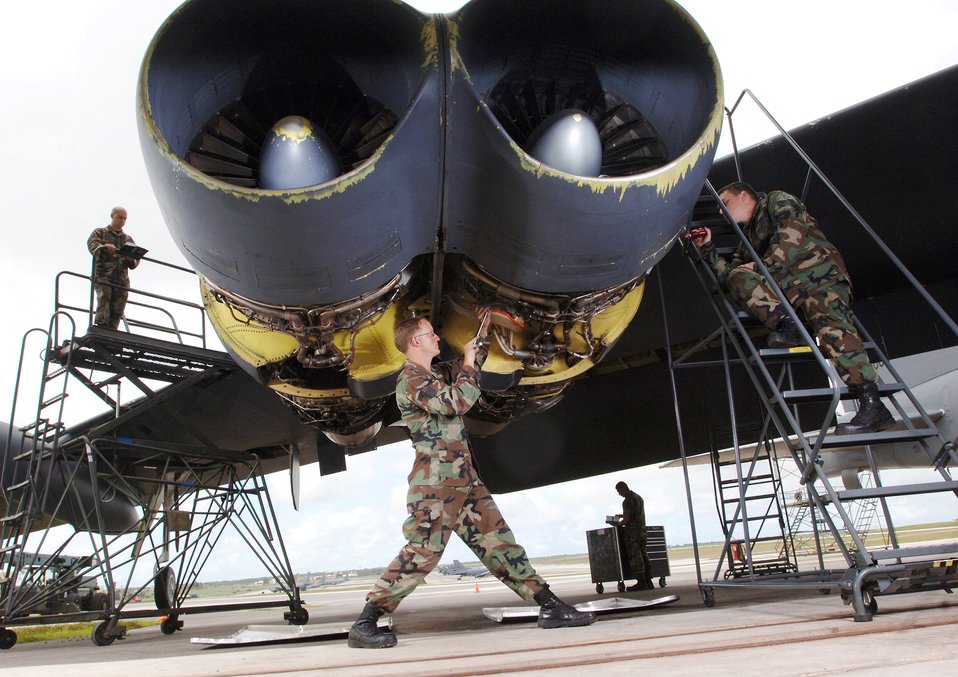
Strato work

ANDERSEN AIR FORCE BASE, Guam (AFPN) -- Staff Sgt. Josh Cormier (left) Staff Sgt. Nick Grady (center), Senior Airman Raymond Gomez (back) and Staff Sgt. Tim Burnside do a phase inspection on a B-52 Stratofortress aircraft here. The Airmen are with the 2nd Maintenance Squadron at Barksdale Air Force Base, La.